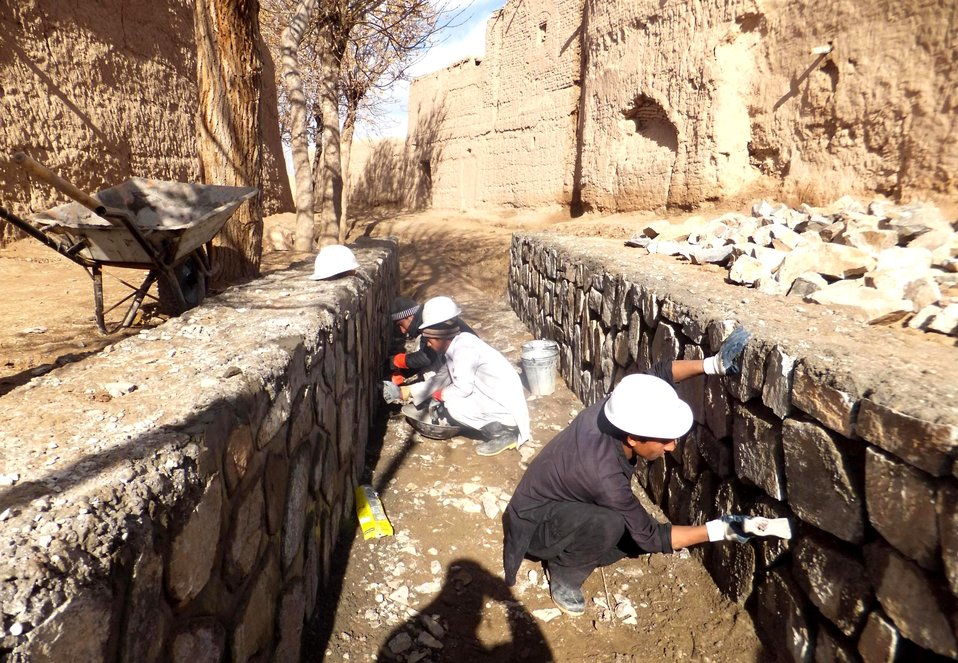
Laborers working to construct a flood protection wall in Salimi village in Pashtun Zarghun District